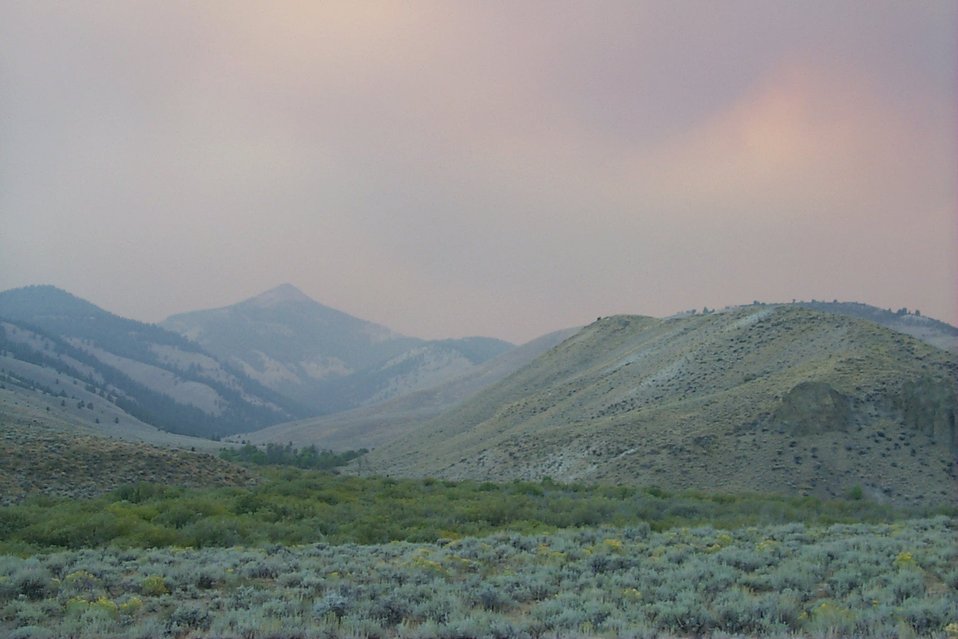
Smoke Fire Clearwater Fire Salmon Field Office USRD Upper Snake River District